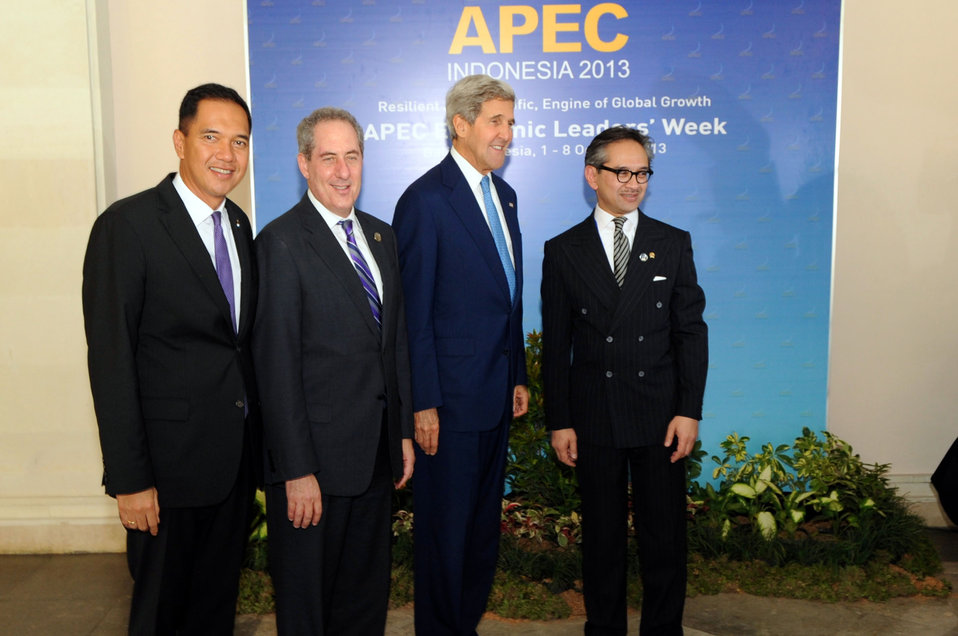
Secretary Kerry and U.S. Trade Representative Froman Pose for a Photo With Their APEC Host Counterparts

U.S. Secretary of State John Kerry and U.S. Trade Representative Michael Froman pose with their Indonesian Counterparts, Dr. Marty Natalegawa, right, and Gita Wirjawan, left, before the start of the Ministerial Meeting Opening Plenary Session in Bali, Indonesia, on October 4, 2013.